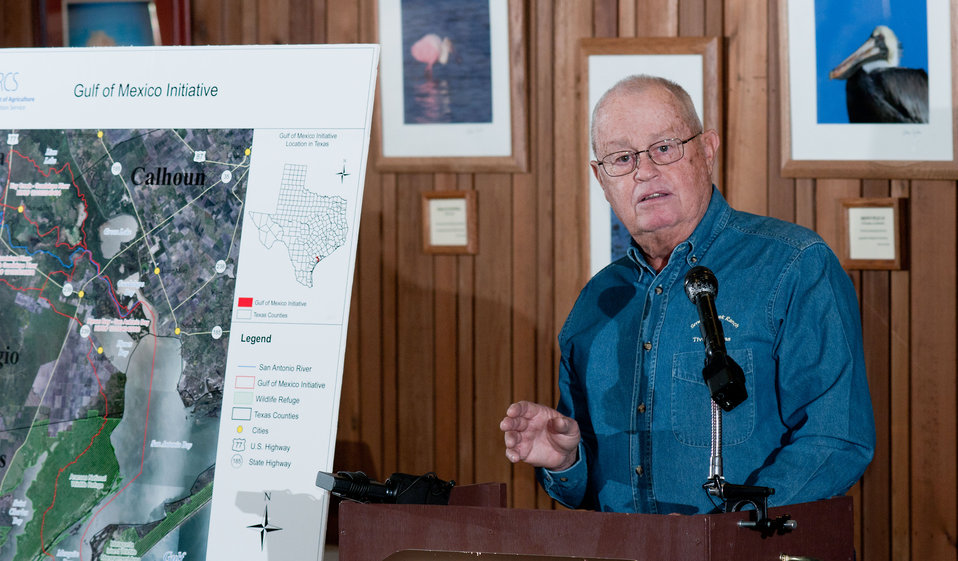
Copano Bay Soil and Water Conservation District Board Member Dallas Ford opened the press conference for the roll out the Gulf of Mexico Initiative (GOMI) in Texas, at the Aransas National Wildlife Refuge Visitor Center, in Austwell, TX, on Friday, Dec. 16, 2011. The Aransas Refuge is a 15,000-acre wildlife sanctuary established in 1939. Its fresh water comes from the San Antonio River, which flows by the historic Alamo southeasterly towards the Guadalupe River at the estuary of San Antonio Bay, the primary body of water for the refuge.